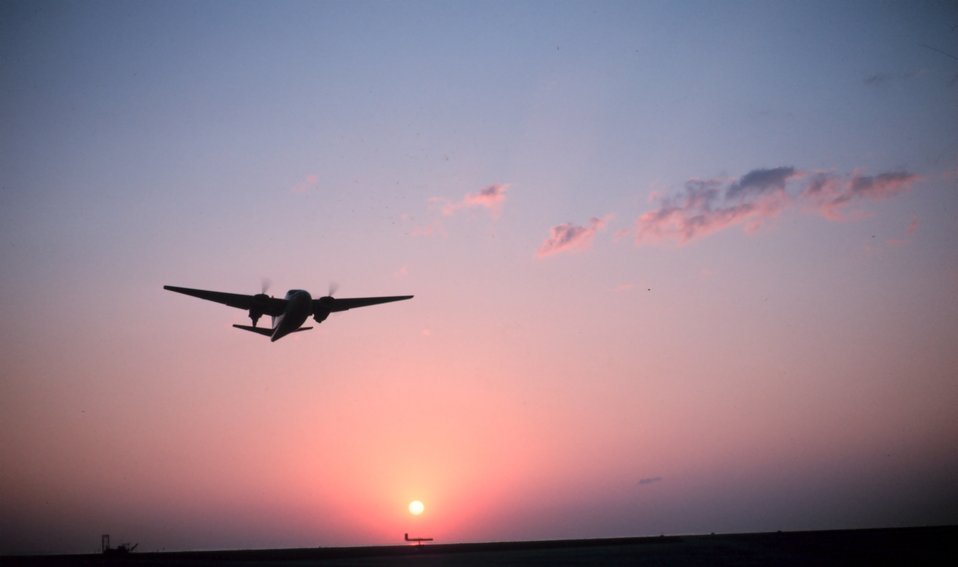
NOAA Buffalo used for photogrammetric missions.